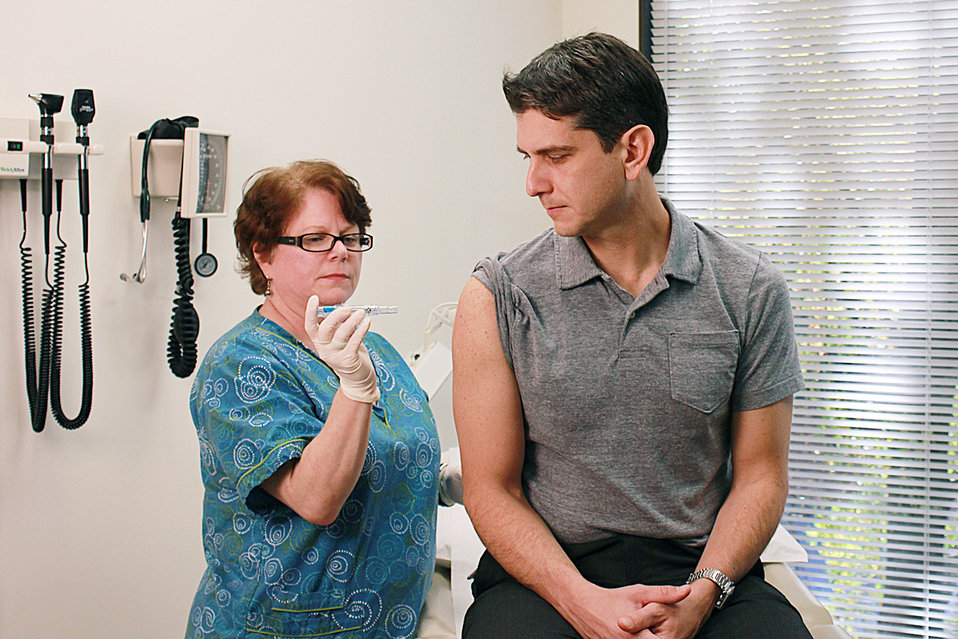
Taken inside a clinical setting, this qualified nurse had just administered a dosage of Fluzone� intradermal influenza virus vaccine to a male clinic patient, using the patient's right shoulder region as the injection delivery site. At this point in the procedure, as she still held the prefilled syringe in her gloved right hand, the nurse had deployed the syringe's needle-shielding system, sheathing the needle in a plastic barrel, thereby, preventing anyone from reusing this device.